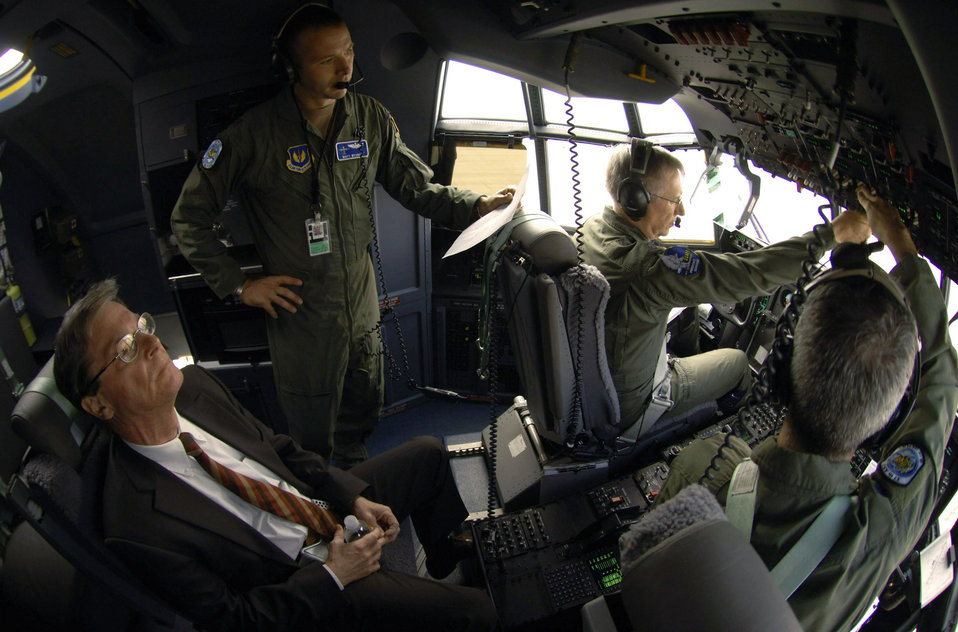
Ramstein welcomes new J-model C-130

Prior to take-off from Spangdahlem Air Base, Germany, C-130J Super Hercules pilots Major Matt Wehner (standing) and Lt. Col. Craig Williams (right seat) assist Gen. Roger A. Brady, U.S. Air Forces in Europe commander, in pre-flighting a J-model Hercules on the last leg of its trans-Atlantic journey from the aircraft assembly plant in Marietta, Ga., to its new home at Ramstein AB, Germany. The pilots are assigned to the 37th Airlift Squadron at Ramstein. General Brady's host-nation advisor, Dick Motz, (left) had a front-row seat for the flight.